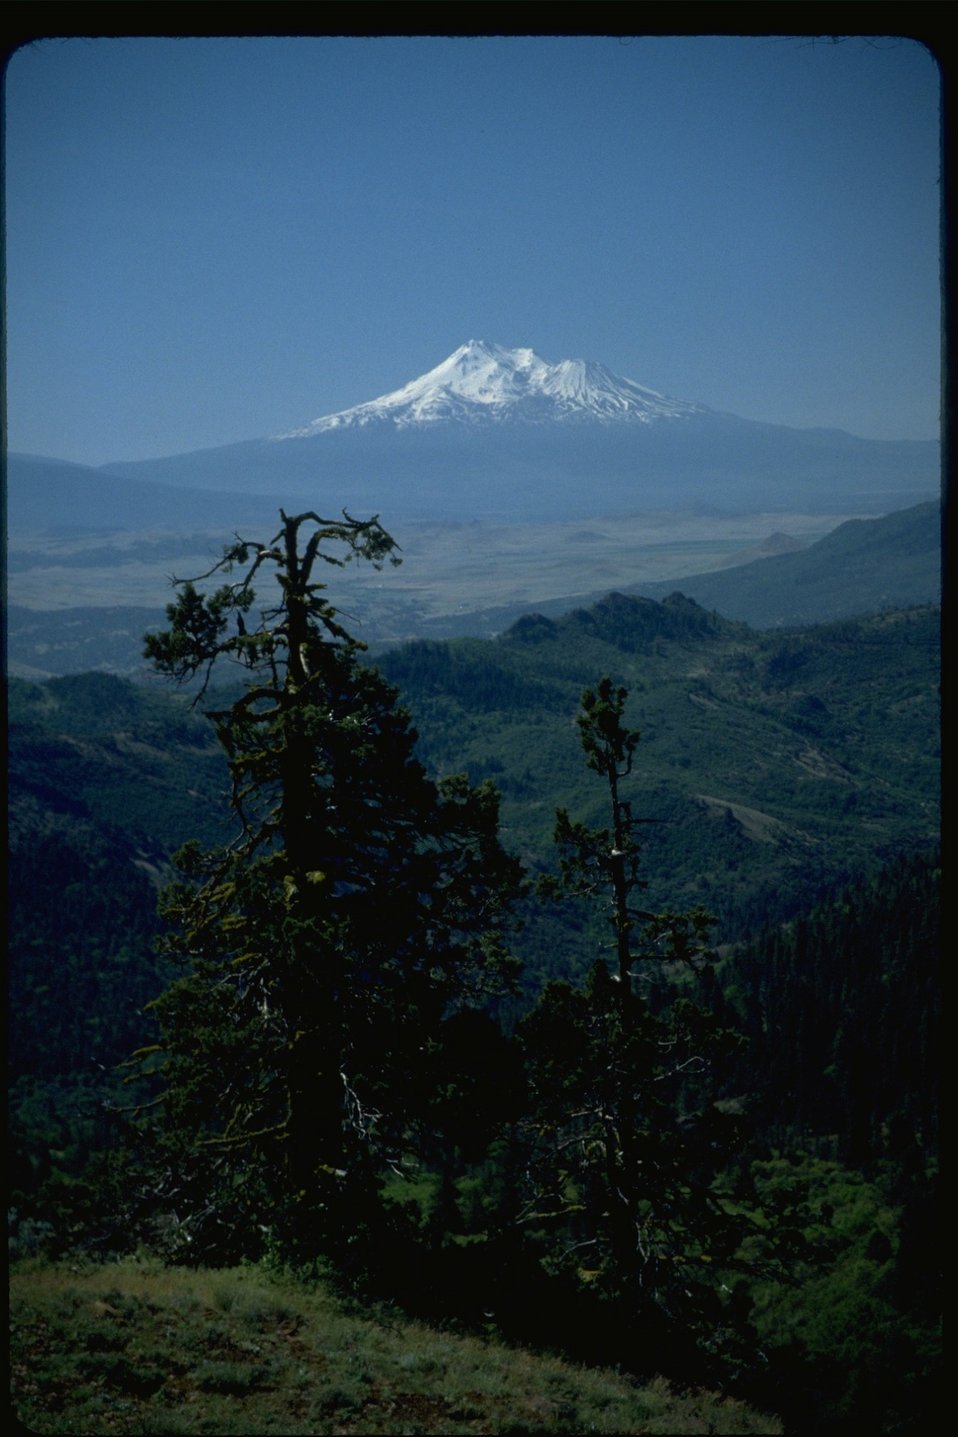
Mount Shasta.